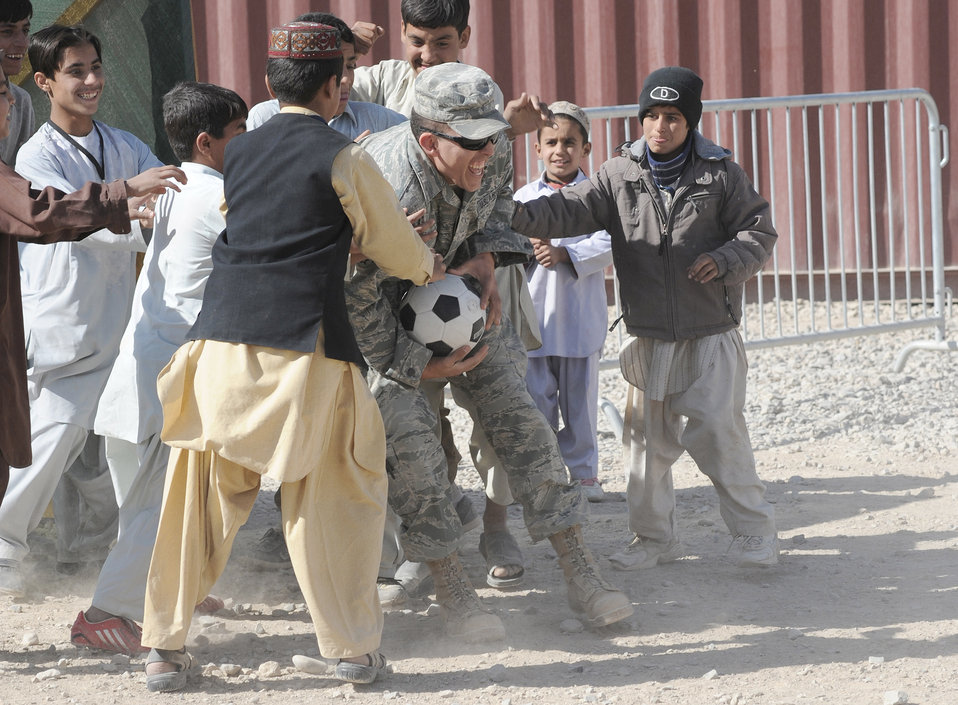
KAF bazaar school

Senior Airman Jonathan Armstrong gets stopped with the soccer ball by local Afghan children while playing a game at the bazaar school Nov. 13, 2010, at Kandahar Airfield, Afghanistan. Airman Armstrong is a vehicle operator and dispatcher assigned to the 451st Expeditionary Logistics Readiness Squadron.